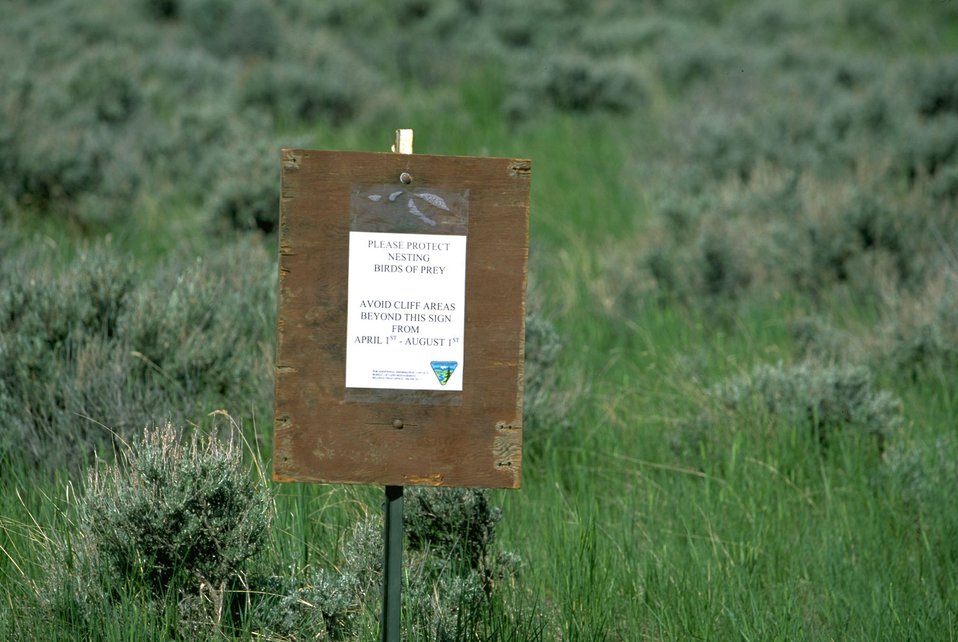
Birds of Prey protection sign in the Four Dances Natural Area